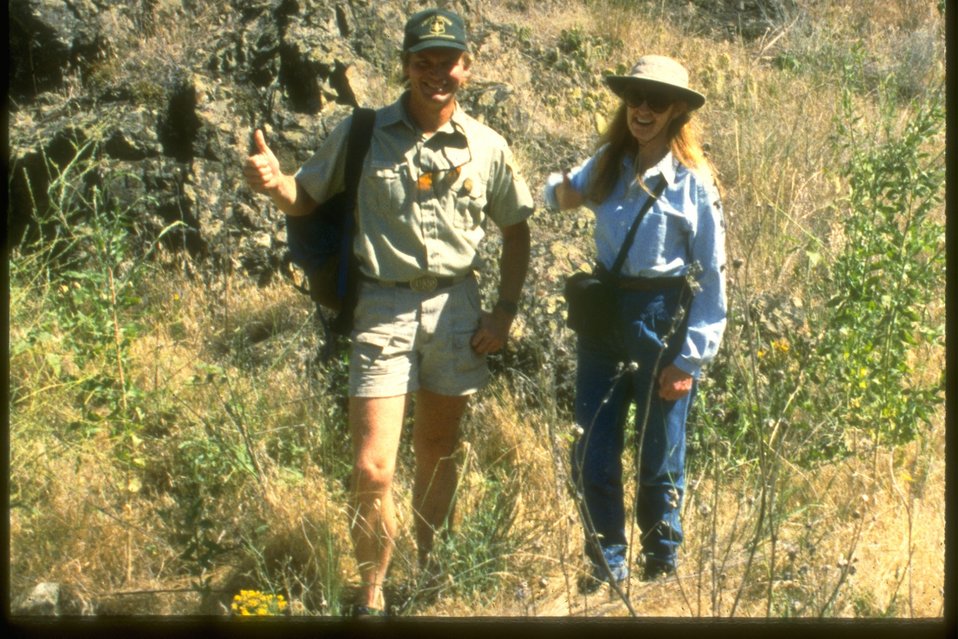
Asher gives a thumbs up because he couldn't find yellow starthistle. (Hells Canyon).